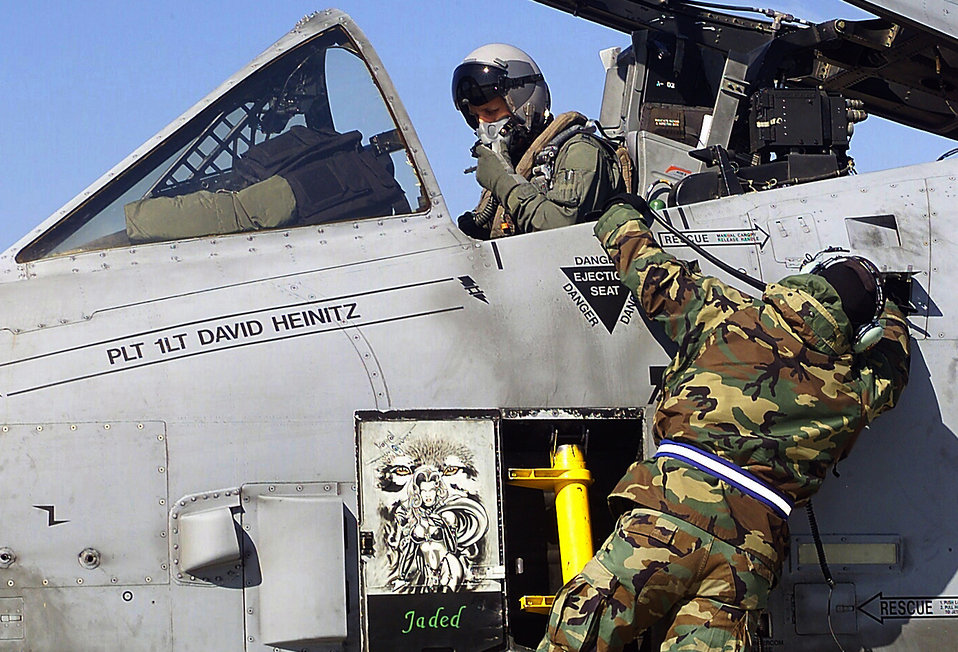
Ready to launch

OSAN AIR BASE, South Korea -- Tech. Sgt. Chris R. Marshel performs an end of runway inspection with an A-10 Thunderbolt II pilot prior to a launch here March 2. Tech. Sgt. Marshel is an end of runway supervisor with the 51st Aircraft Maintenance Squadron.